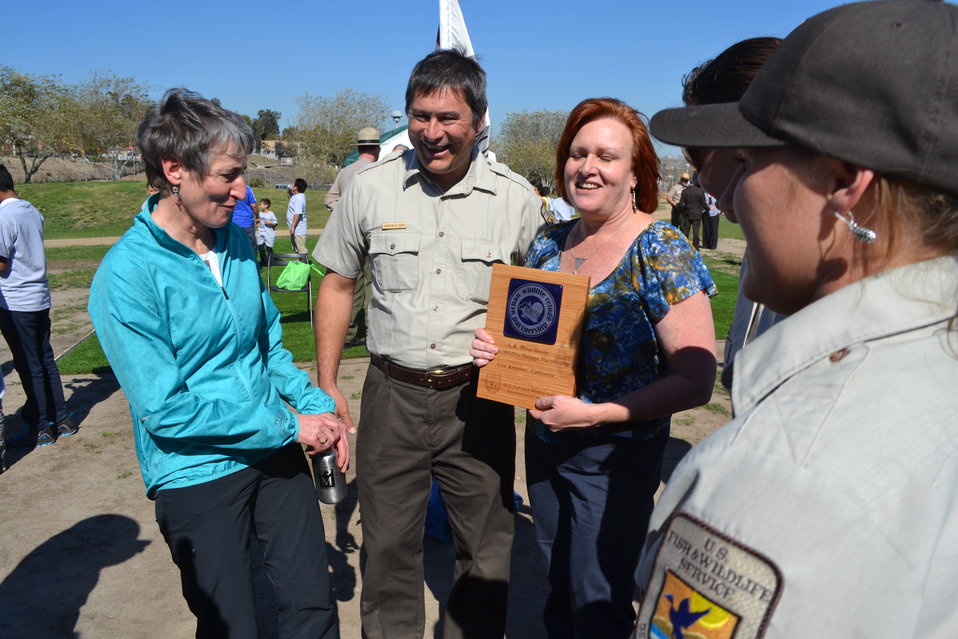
SOI Sally Jewell Visit to LA

From left: Secretary Sally Jewell, Project Leader for the SDNWR Complex Andy Yuen, Director of Education Programs for the Friends of the Los Angeles River Shelly Backlar, Environmental Education Specialist for the SDNWR Complex Chantel Jimenez, and Public Information Specialist for the SDNWR Complex Lisa Cox.
(Anne Dove, NPS for the USFWS)